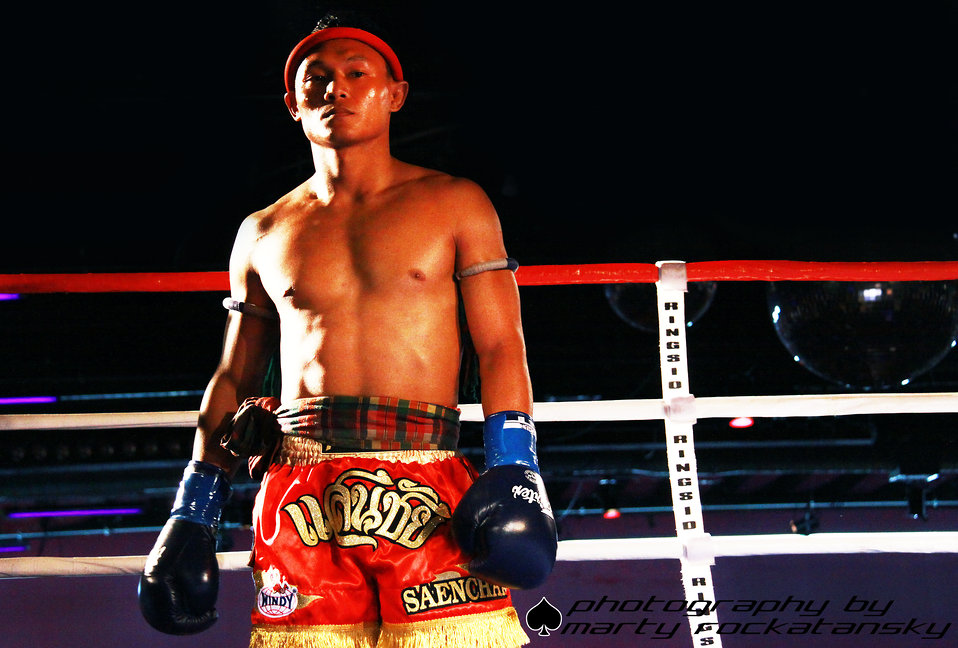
Saenchai Sor Kingstar vs Tetsuya Yamato in LA.